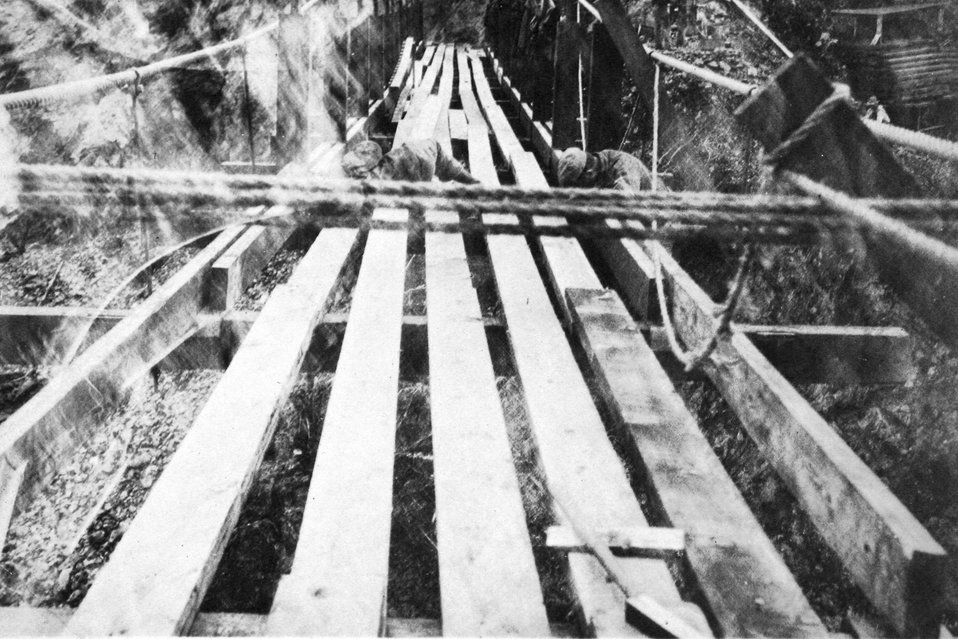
Building a swing bridge on the Rogue River. It was taken down in 1935.